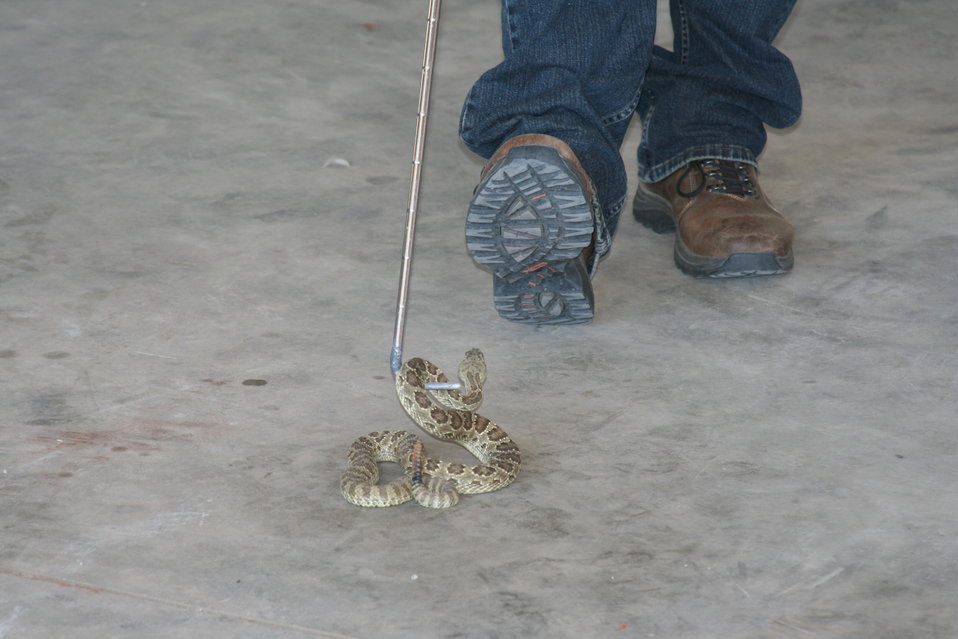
2011 Huron Prairie Fest